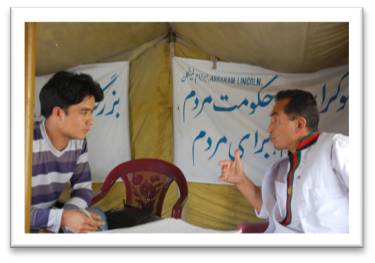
Website will be Key Information Source

Distributing accurate and unbiased information in a country without a tradition of free press is a challenge. However, USAID, through the Journalist Training Program under the Consortium for Elections and Political Process Strengthening (CEPPS), developed a tri-language website (English-Dari-Pashto) that delivers content related to politics, society, and the history of Afghanistan.

The website, www.afghanistanvotes.com, was established in July 2009, and became a resource for journalists on election related matters, receiving visitors from 57 countries and 2,536 hits just prior to the August Presidential elections. Spurred by the success, the website has been renamed www.bamdad.af (bamdad is the Dari word for “wake-up time”).

With a new name and the .af domain, the website has developed an “Afghan face” that, along with a renewed image and revised layout, will transform it into a future key source of information for Afghan media, international press, and the public on matters related to the democratization of Afghanistan and CEPPS program activities. Editor Jamaluddin Temori said, “Working on the website and receiving journalistic training has provided me with an outstanding opportunity to gain experience and knowledge with online media. I am helping my people find a way forward from war, as well as providing unbiased information to help stabilize the foundation of our newly based democracy.”

The CEPPS program strengthens the ability of political stakeholders to articulate and organize during elections, as well as to increase public awareness and oversight of the electoral process. CEPPS also aims to increase broad-based participation in the electoral process at the national and sub-national level. A sub-component of CEPPS, the Journalist Training Program, bridges the information gap between the public and rapidly changing events through the Government of Afghanistan.